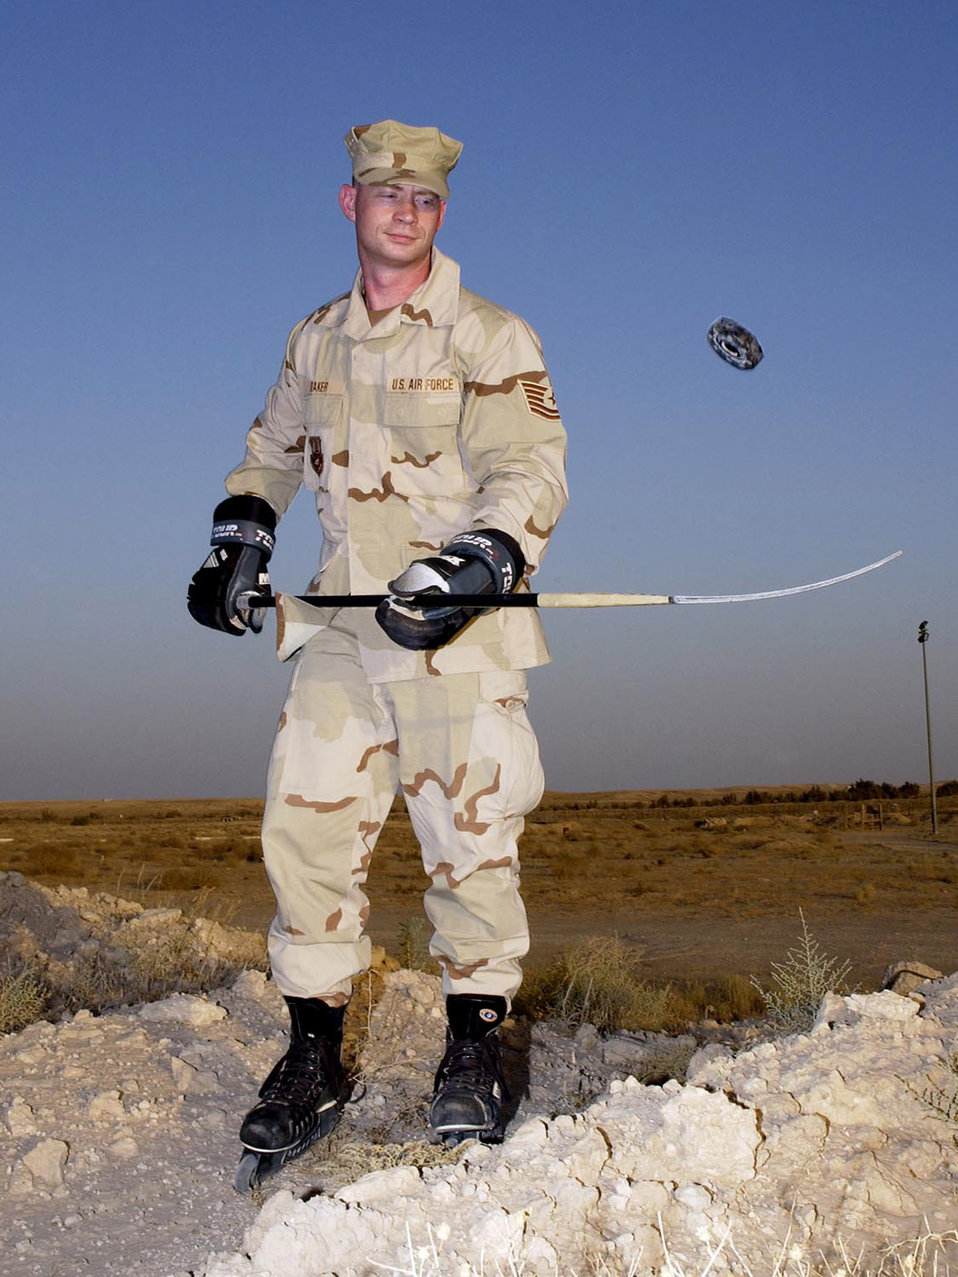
Airman finds peace in desert playing hockey

After working a 12-hour shift, Tech. Sgt. Wayland J. Baker is ready to hit the